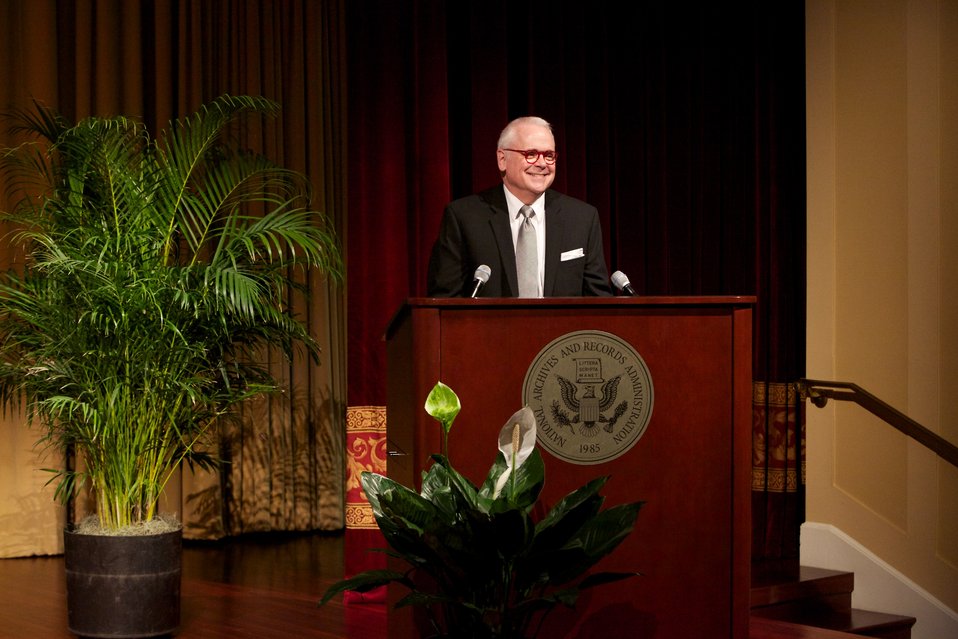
Brown at 60: Is Full Equality Within Our Grasp? A Conversation on Zero Tolerance, Segregation, and the Promise of Justice